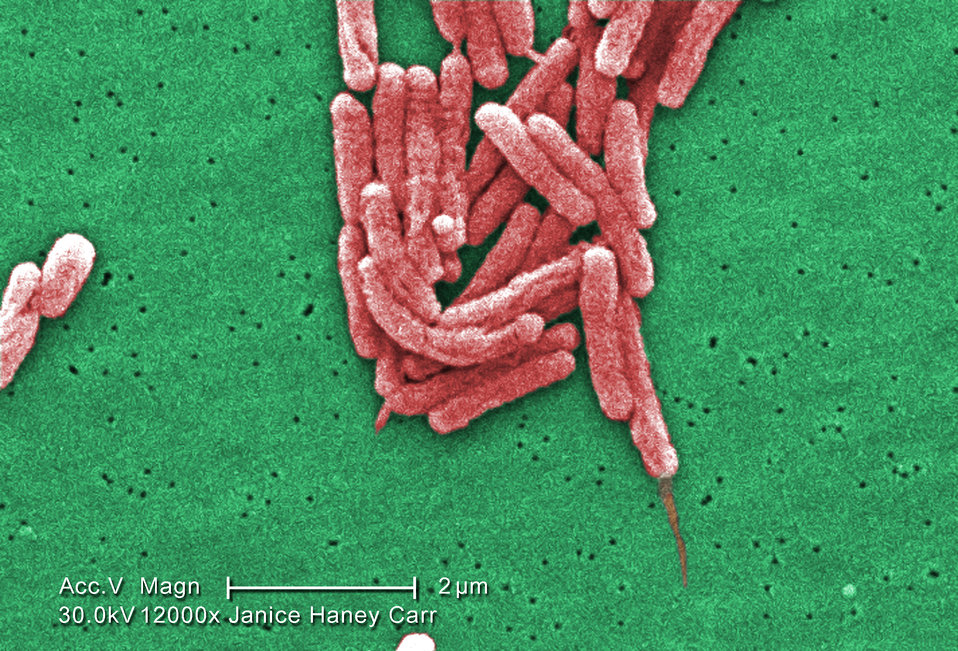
Under a high magnification of 12000X, this colorized scanning electron micrograph (SEM) depicted a number of Gram-negative Legionella pneumophila bacteria. Please see PHIL 11092 through 11152 for additional SEMs of these organisms, specifically PHIL 11114 for a black and white version of this image. Note that a few of these bacteria are sporting their flagella.